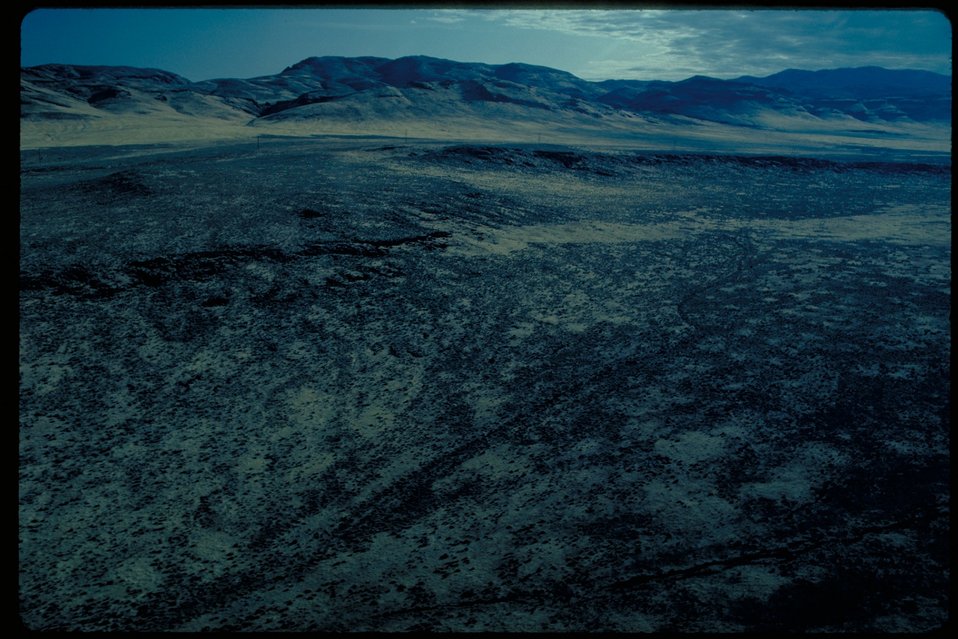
Oregon Trail South of Canyon Creek Lower Snake River District